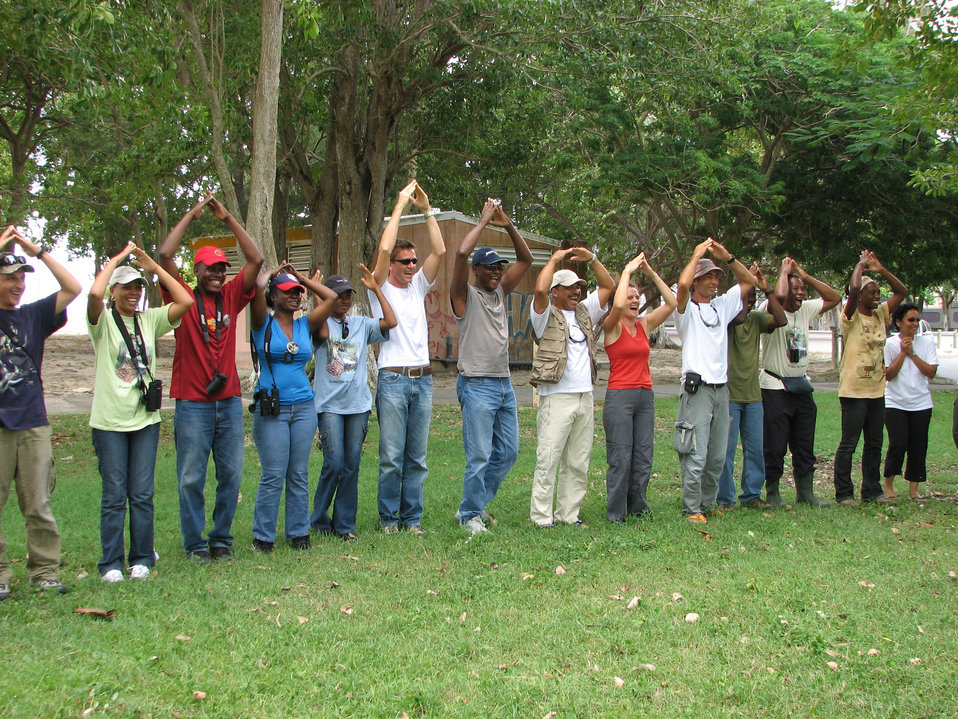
Habitat Havoc - 4

Students learn about effects on Caribbean bird habitat through participatory activities at SCSCB training.